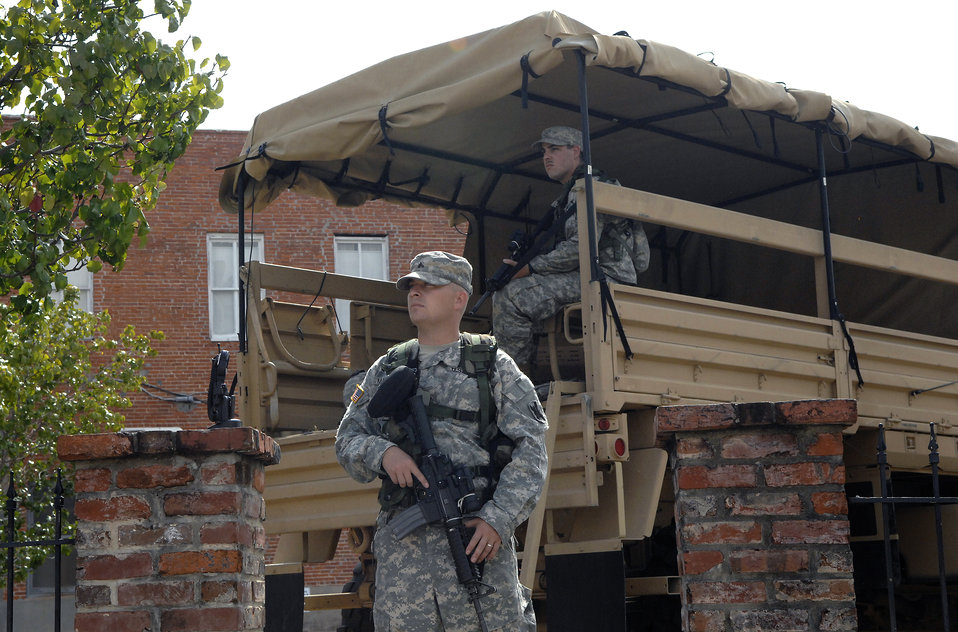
Protecting the streets

Corporal Jody Mahaffey (front) and Private First Class Kevin Farr (back) of the Army National Guard protect high risk looting targets such as pawn shops, gun shops and pharmacies in downtown Lake Charles, La., in anticipation of of Hurricane Ike Sept. 12. Cpl. Mahaffey and PFC. Farr and assigned to the Louisiana Army National Guard, Bravo Company, 3rd Battalion, 156 Infantry.